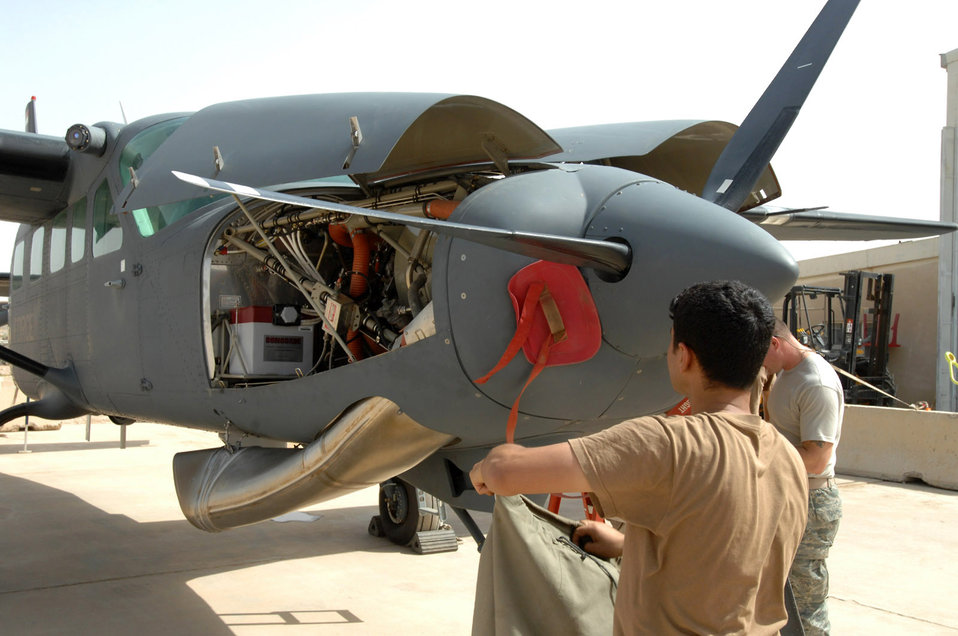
Iraqi airmen keep fleet soaring

An Iraqi airman conducts maintenance on a Cessna June 7 at Kirkuk Air Base, Iraq. While Iraqi air force pilots continue flying sorties to aid stability in their nation, Iraqi maintainers on the ground have recently achieved important benchmarks to keep their fleet in the air. Airmen with the Iraqi air forces' 3rd Squadron took over a wide variety of maintenance duties on the unit's Cessna intelligence, surveillance and reconnaissance fleet, a task formerly performed by U.S. contractors.